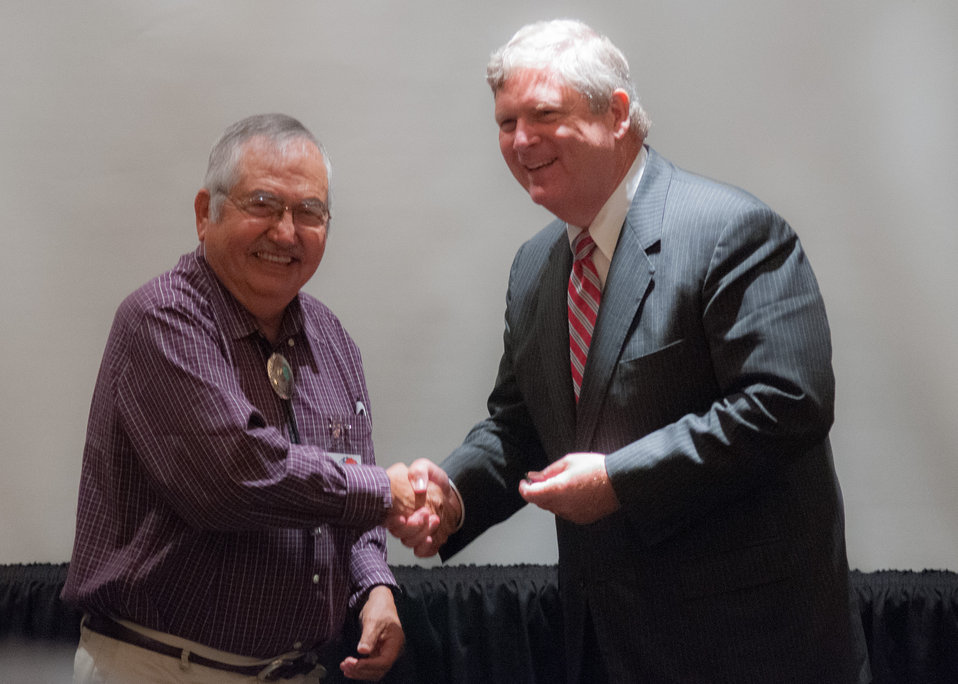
Gilbert Harrison, a rancher from the Navaho Nation in Shiprock, NM presents a pen to Agriculture Secretary Tom Vilsack at the U.S. Department of Agriculture's (USDA) Council for Native American Farming and Ranching (CNAFR) members, on Monday, Sep. 9, 2013 at the L'Enfant Plaza Hotel, in Washington, D.C. CNAFR was created to advise the Secretary on ways to eliminate barriers to participation for Native American Farmers and Ranchers in USDA programs. The Council was established as part of the Keepseagle settlement, and is conducted under the oversight of USDA's Office of Tribal Relations, which is part of the Office of the Secretary of Agriculture. The Director of Tribal Relations Leslie Wheelock serves as Designated Federal Official (DFO) for the Council. Also in attendance is Agriculture Assistant Secretary for Civil Rights Joe Leonard, Jr. Ph.D., Farm Services Administration Administrator Juan M. Garcia and Deputy Administrator for Farm Loans Programs Chris Beyerhelm.